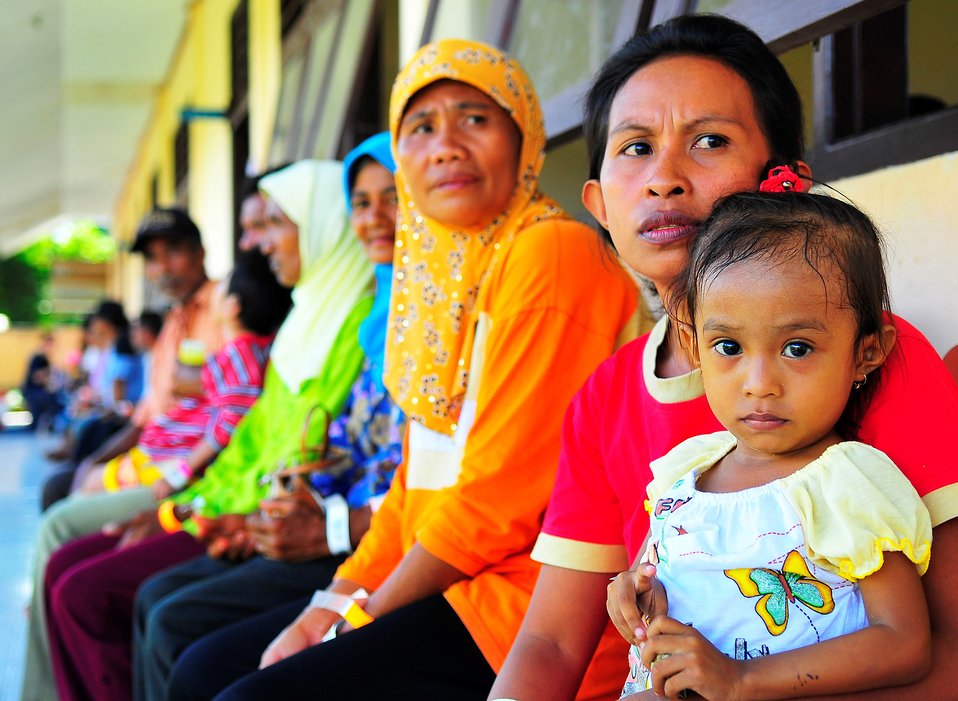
Local Indonesians wait for medical screening and treatment at a medical civic action program, conducted at the Dokulamo school by the Military Sealift Command hospital ship USNS Mercy (T-AH 19) during its visit to Tobelo, Indonesia, on July 14, 2010. Mercy is deployed for Pacific Partnership 2010, the fifth in a series of annual U.S. Pacific Fleet endeavors conducted in Indonesia as a disaster relief exercise aimed at strengthening regional partnerships.